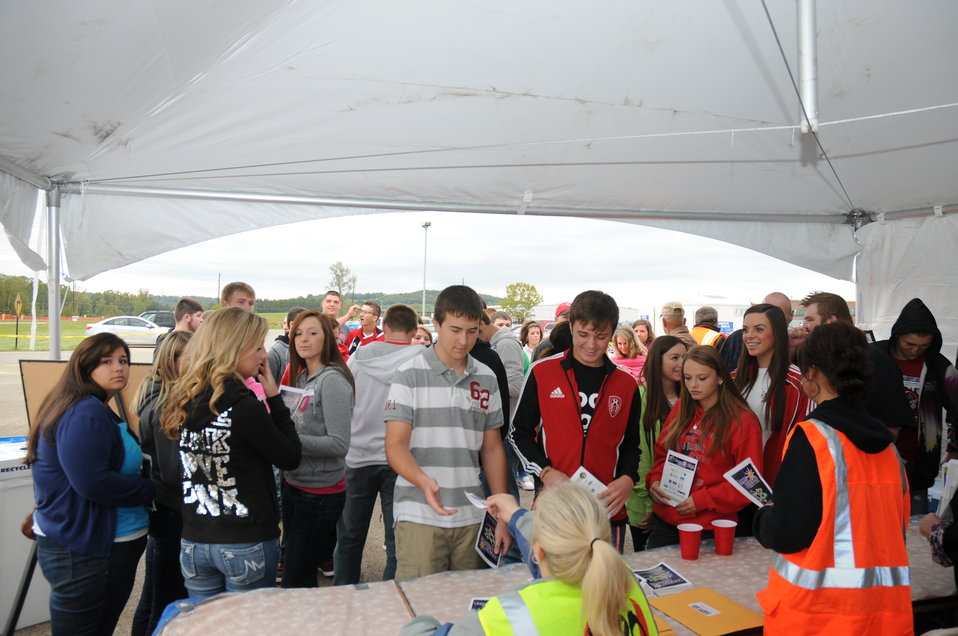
Science Alliance

Students arrive at the welcome tent during the beginning of the two-day Science Alliance, in which more than 900 area high school juniors enjoyed
presentations in 14 separate
areas on a midway in the
X-2207A parking lot.